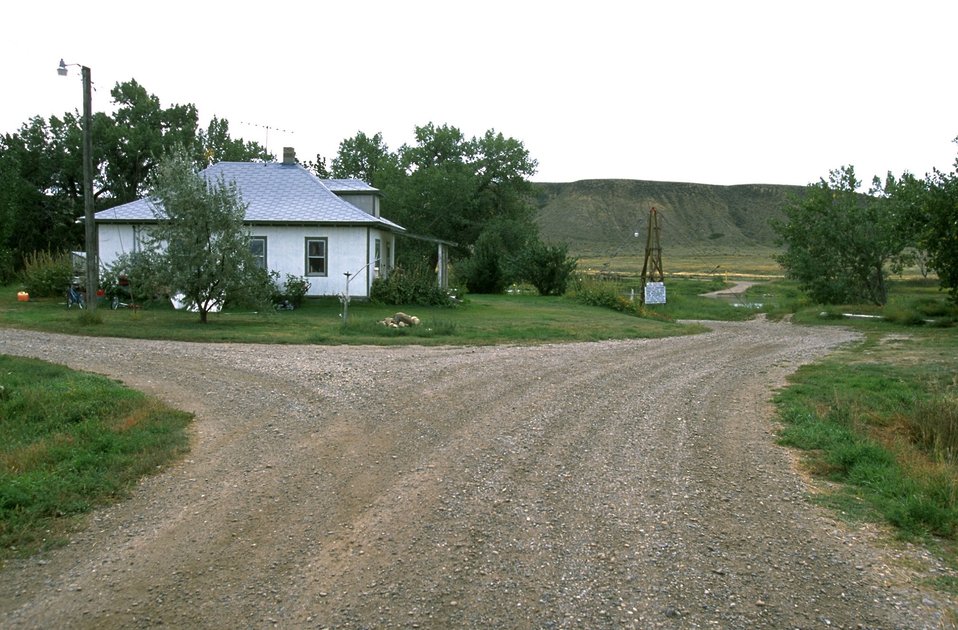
Virgelle Merchantile near Loma